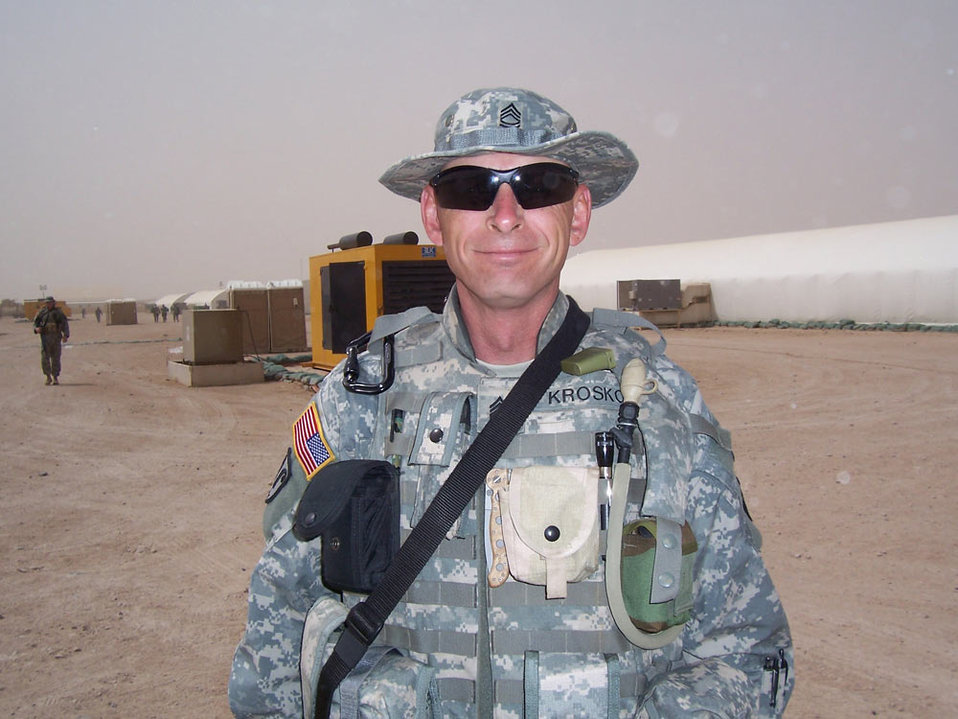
Larry Krosko-Midwest Region

Larry Krosko retired in 2008 at rank of Platoon Sergeant (Sergeant First Class) after 21 years of service in the Minnesota Army National Guard. He did two combat tours -- Operation Desert Storm and Operation Iraqi Freedom. He now works as a Maintenance Mechanic at Tamarac National Wildlife Refuge in Minnesota.